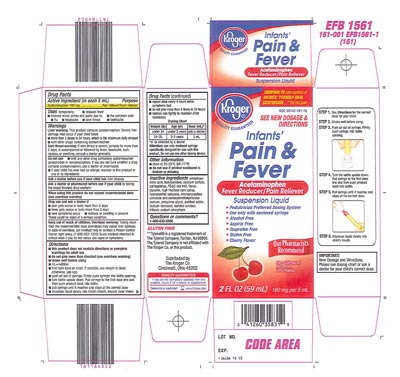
Recalled - Acetaminophen infant suspension liquid

November 1, 2013 – Product Recall – Perrigo Initiates Nationwide Voluntary Product Recall of Acetaminophen Infant Suspension Liquid, 160 Mg/5 Ml, Due to a Potential Defect with the Co-packaged Oral Syringe.